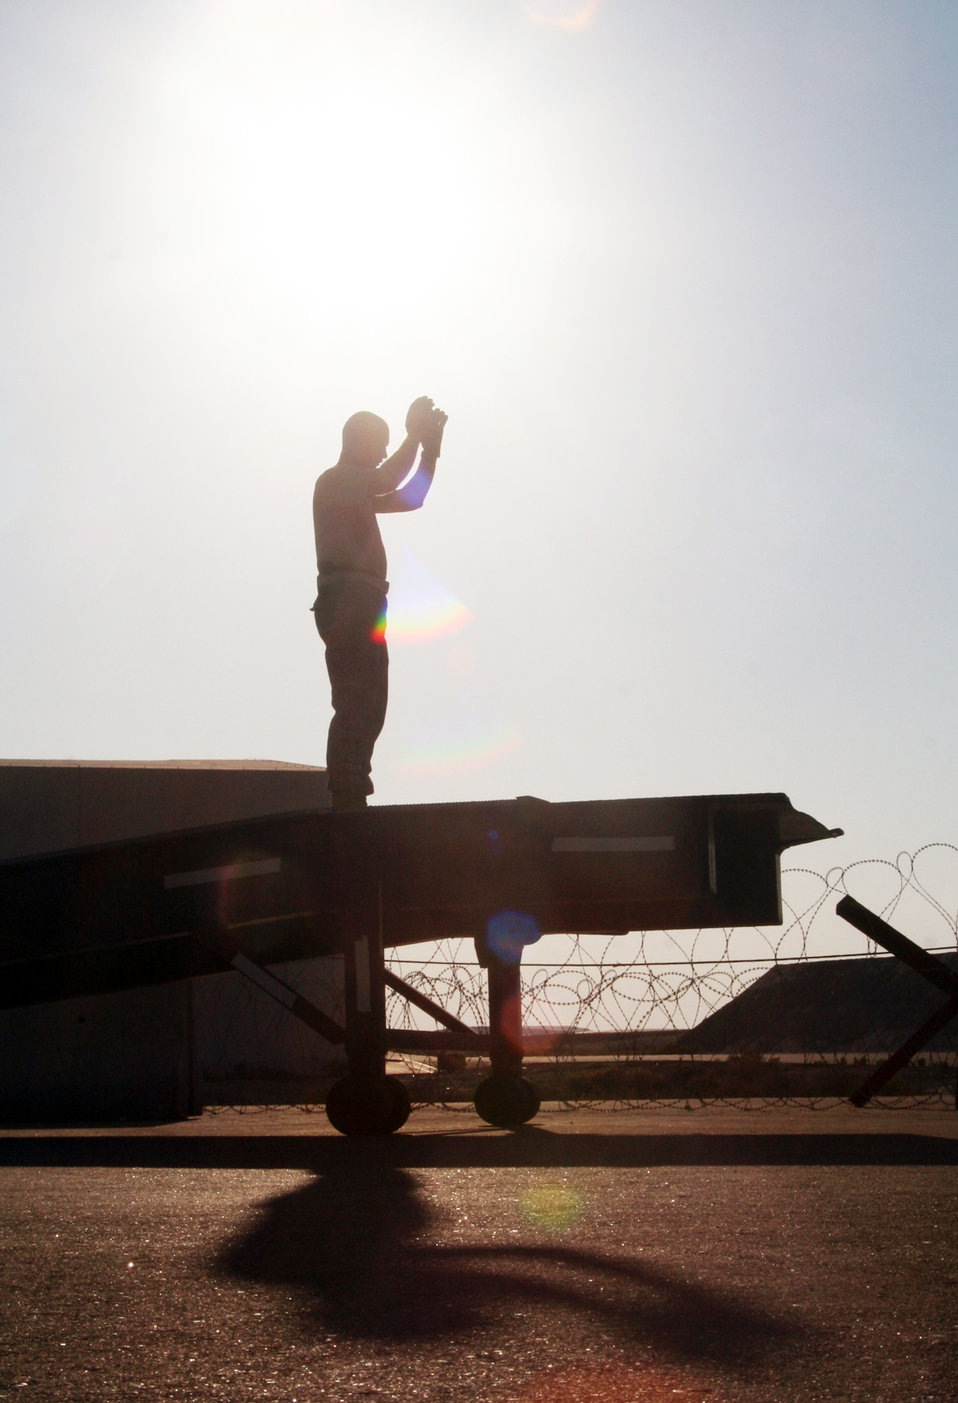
Deployed aerial porters load American buses on Russian-made transport bound for Afghanistan

Tech. Sgt. Andrew McMahon directs the loading of a 20,000-pound bus on a loader during operations Dec. 30, 2009, at an air base in Southwest Asia. Sergeant McMahon and five other air transportation Airmen loaded two buses on a Russian-built IL-76 transport which flew the buses to Afghanistan. Sergeant McMahon is the NCO in charge of the 380th Expeditionary Logistics Readiness Squadron Air Terminal Operations Center.